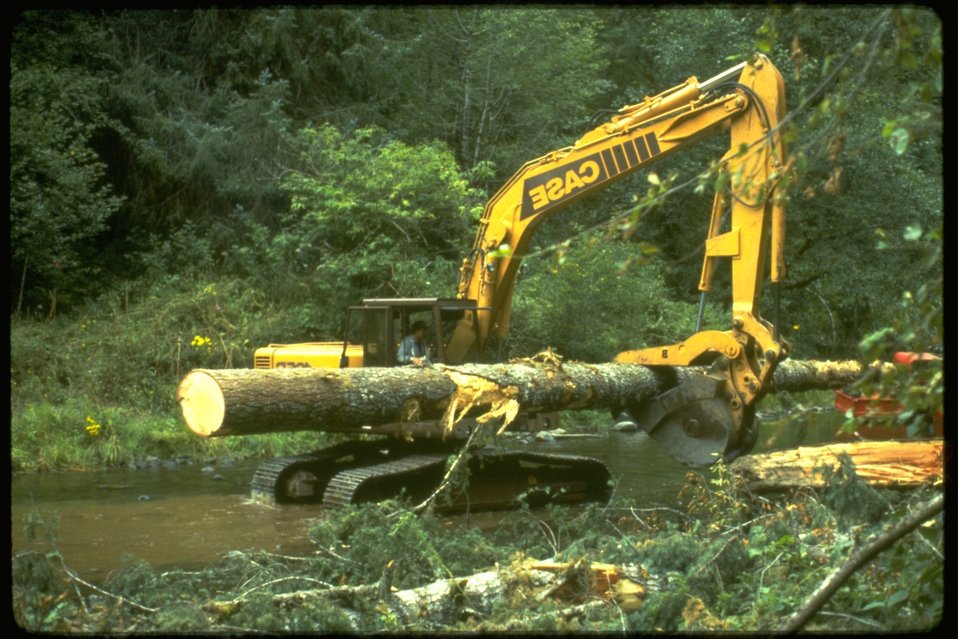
Putting in stream structures in the Nestucca River.